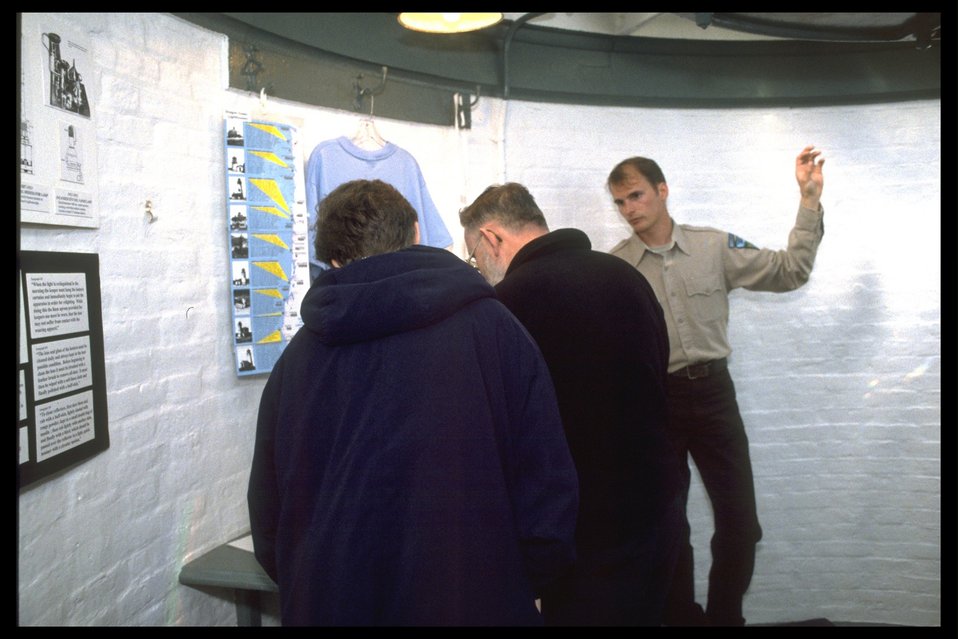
Inside of Yaquina Head Lighthouse.